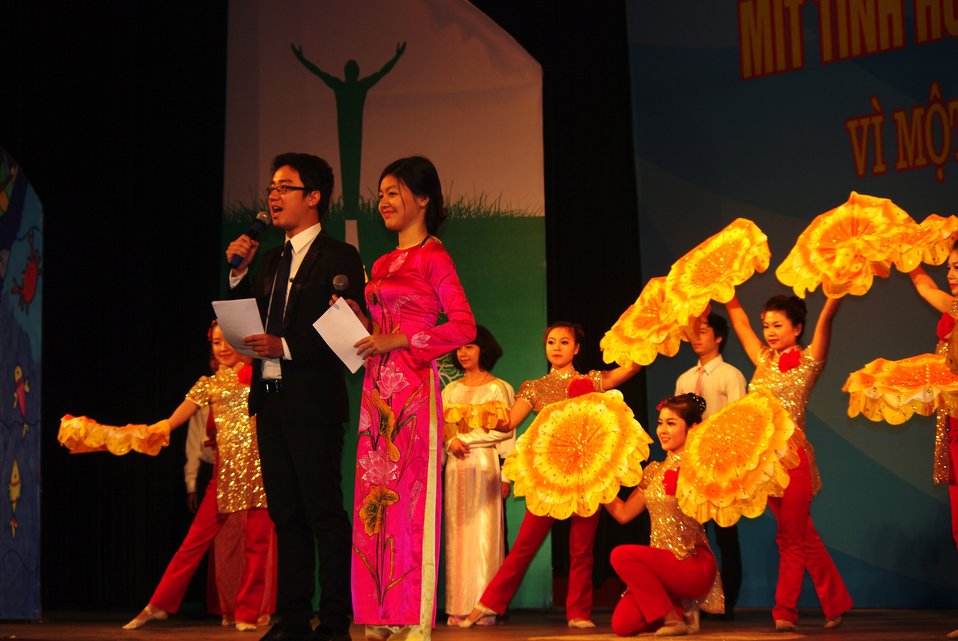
Performers at the World TB Day Event in Hanoi

March 23, 2013